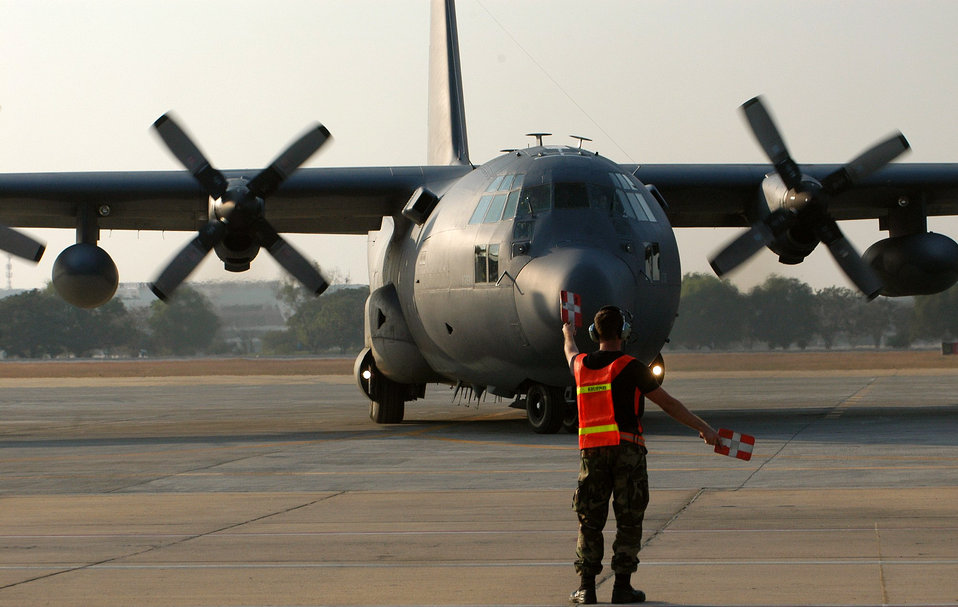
Airmen continue to deliver relief in Thailand

BANGKOK, Thailand -- An Airman here launches an MC-130 to Phuket, Thailand, on Jan. 1. The plane was loaded with five pallets of blankets and medical supplies. He and 100 others from the 353rd Special Operations Group are flying supplies to the tsunami-hit areas of southern Thailand. The 353rd SOG is assigned to Kadena Air Base, Japan.